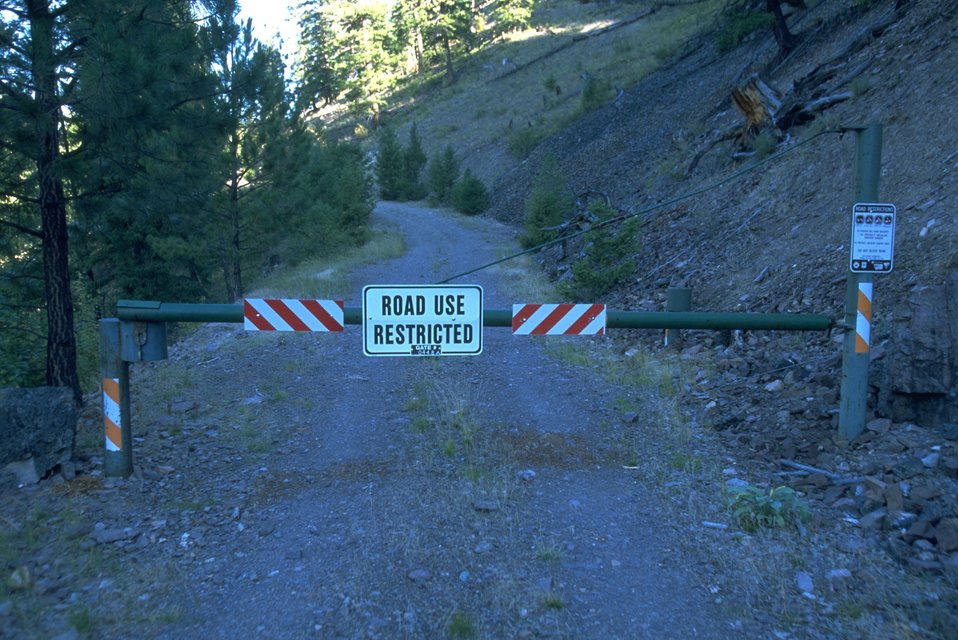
Road closure gate